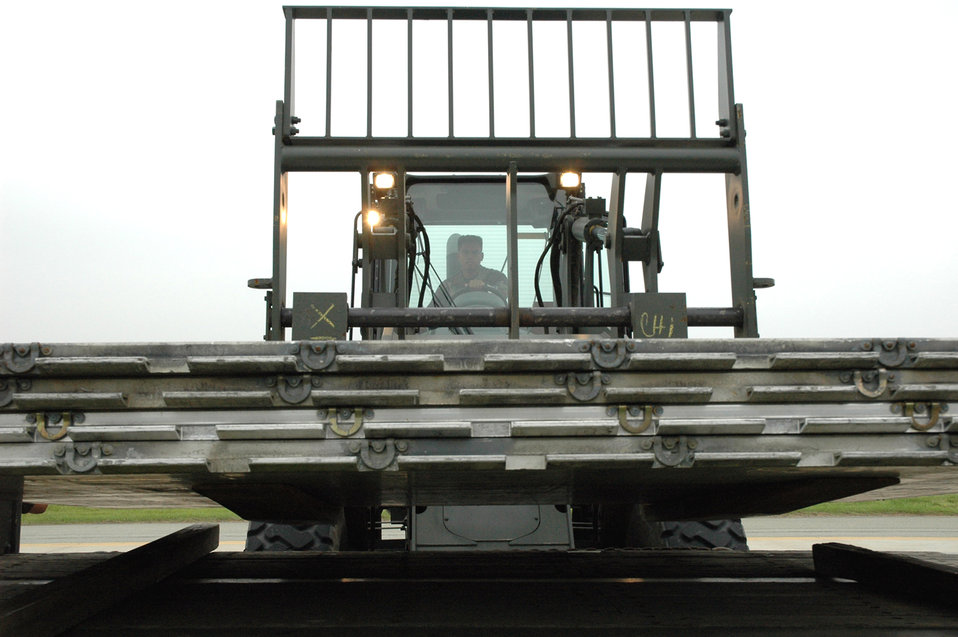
Runway closure

Airman 1st Class Rudy Garcia unloads supplies for the 36th Fighter Squadron at Osan Air Base, South Korea. Logistics readiness Airmen transported supplies and personnel around the peninsula before, during and after the recent runway renovation. Airman Garcia is assigned to the 51st Logistics Readiness Squadron.